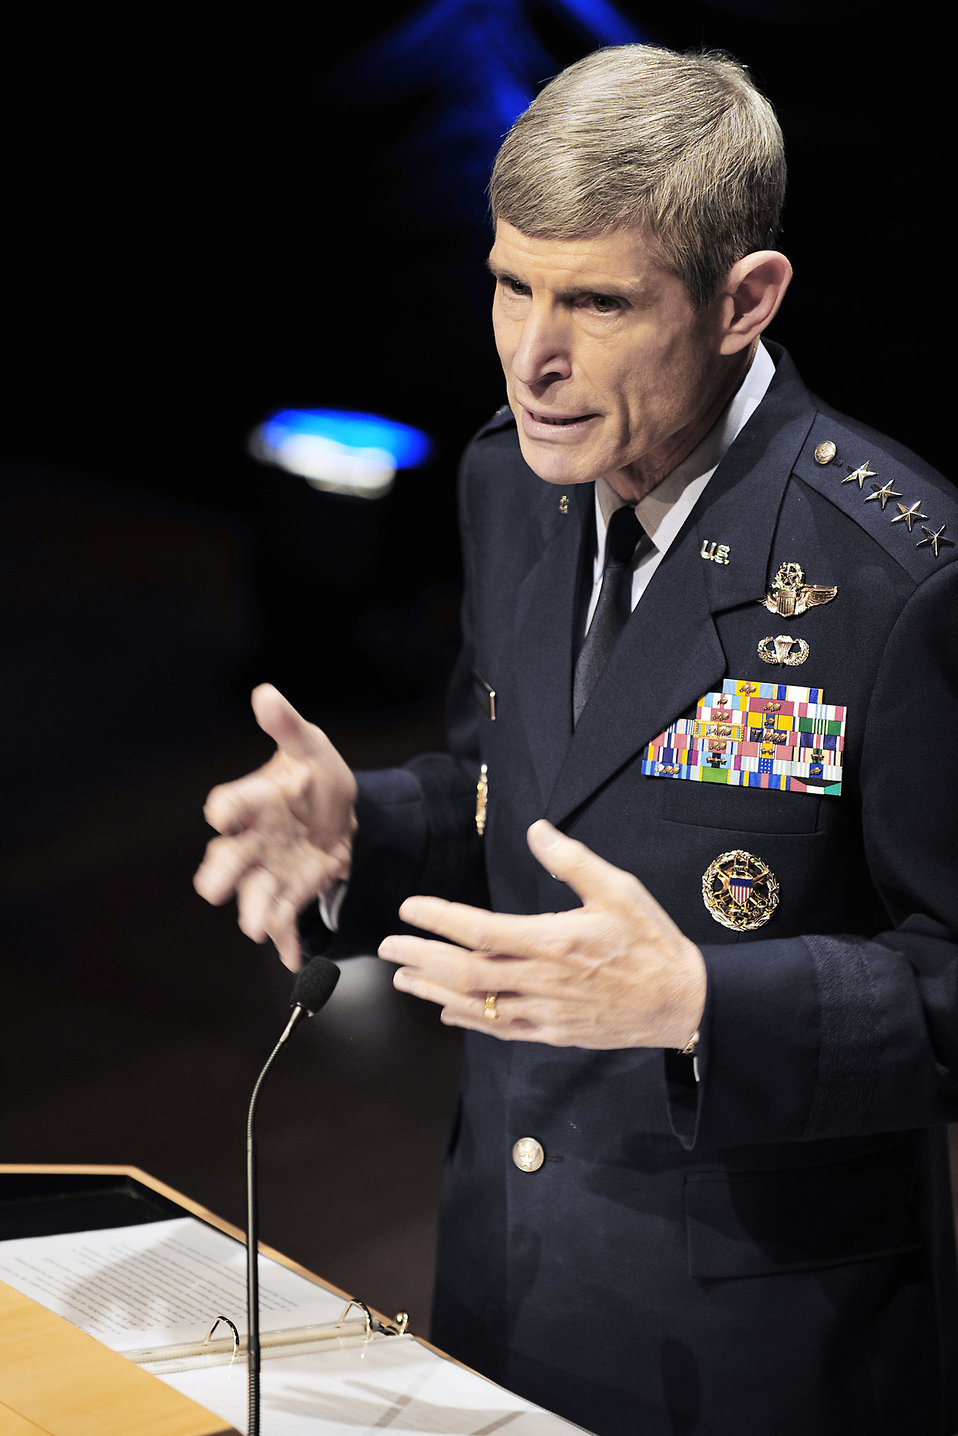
CSAF addresses senior leaders at conference

Air Force Chief of Staff Gen. Norton Schwartz addresses senior-level officials, senior military sister service officials, foreign military officers, leaders in academia and science and other distinguished visitors Jan. 20, 2010, during the 38th Institute for Foreign Policy Analysis-Fletcher Conference on National Security, Strategy and Policy in Washington, D.C. During his presentation he spoke about air, space and cyberspace power in the 21st century.